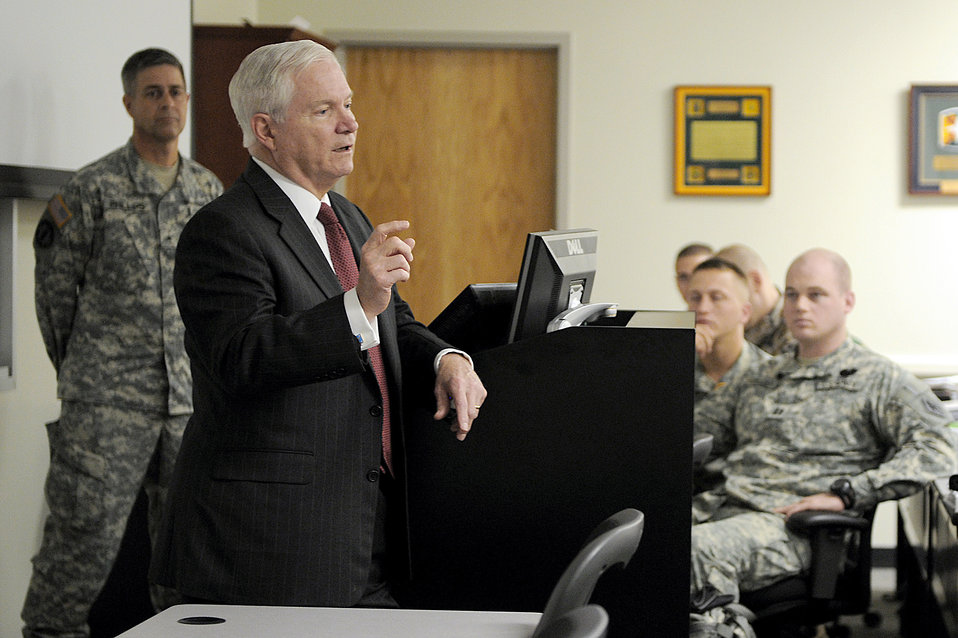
Secretary Gates

Defense Secretary Robert M. Gates speaks with students May 19, 2011, at Fort Leonard Wood, Mo.